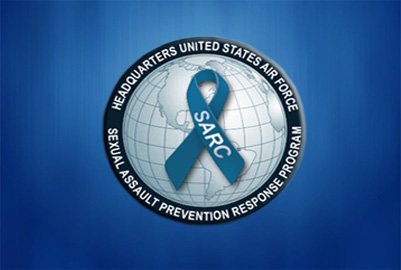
(U.S.Air Force graphic)